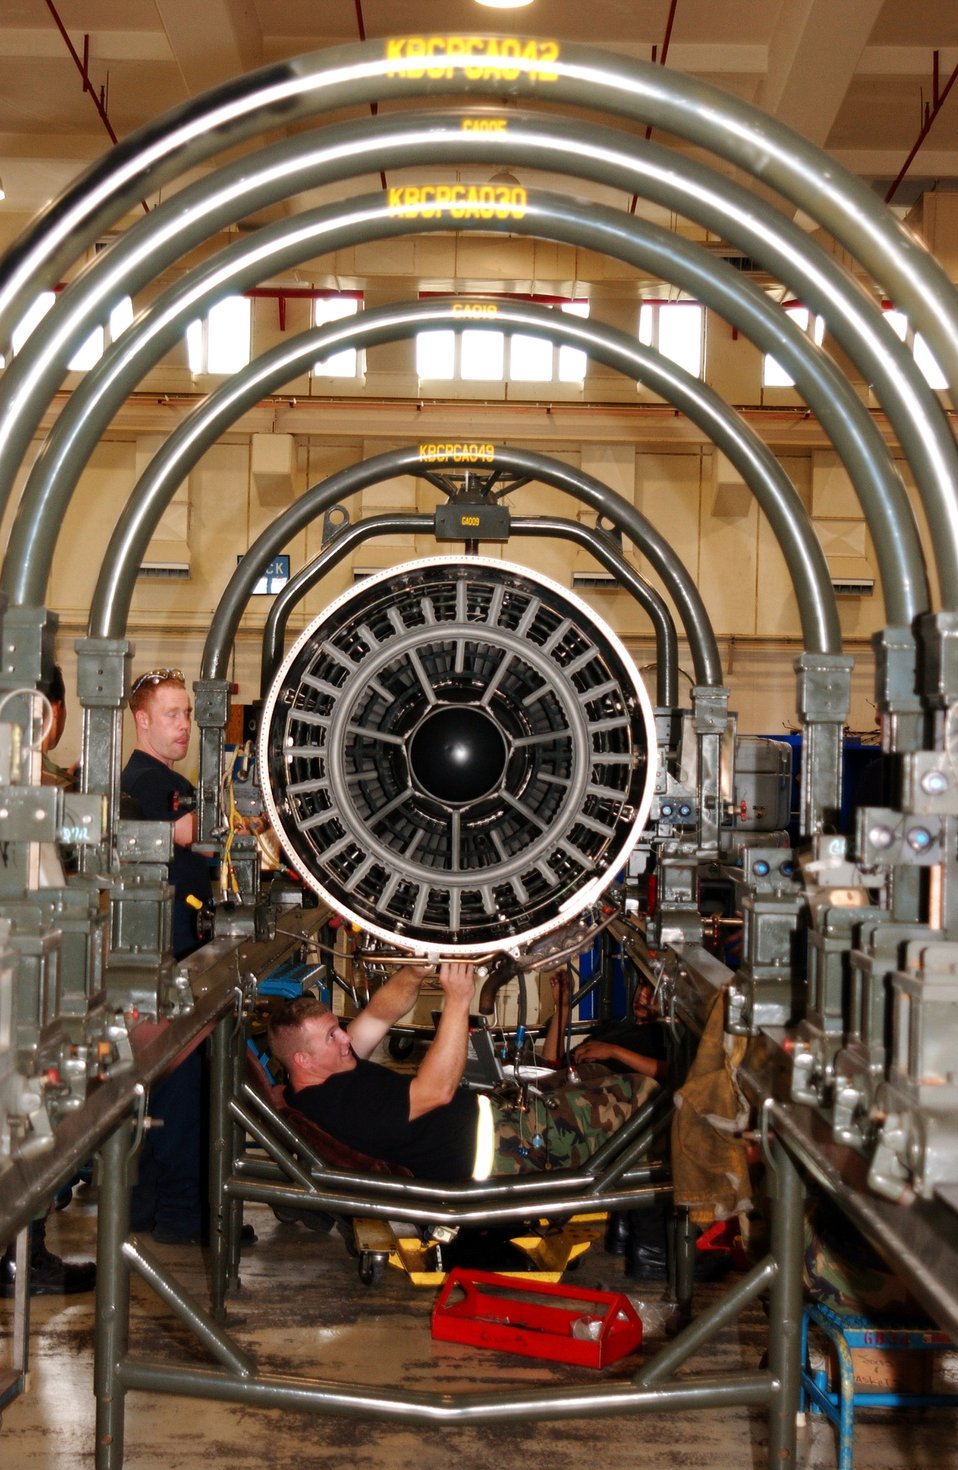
Engine inspection

Senior Airmen James White and Robert Crothers inspect an F-15 Eagle aircraft engine at Kadena Air Base, Japan.